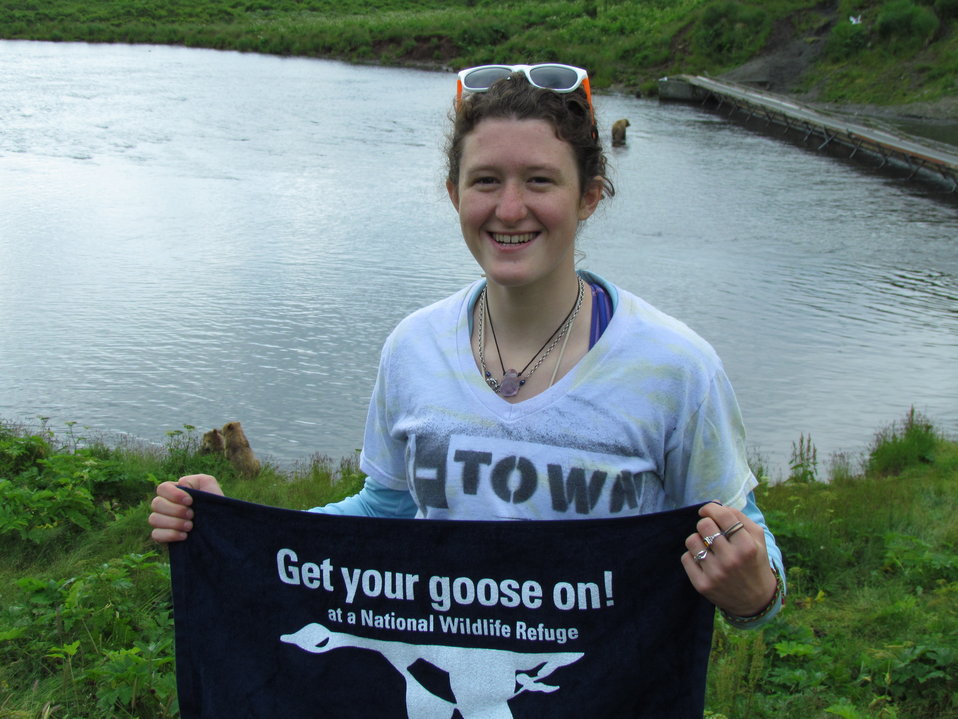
Get Your Goose On! - Alaska Style

YCC crew member, Iris Blakeslee, with three Kodiak Brown Bears

Credit: Shelly Lawson / USFWS

The Kodiak National Wildlife Refuge is a United States National Wildlife Refuge in the Kodiak Archipelago in southwestern Alaska, United States.

The Kodiak National Wildlife Refuge includes the southwestern two-thirds of Kodiak Island, Uganik Island, the Red Peaks area of Afognak Island and all of Ban Island in the archipelago. It encompasses 1,990,418 acres (8,054.94 km2).[2] The refuge is administered from offices in Kodiak.

The refuge contains seven major rivers and about 100 streams. It is a spawning ground for all six species of Pacific Ocean salmon, trout and several other fish species, as well as a nesting ground for 250 species of bird, many of which feed on salmon. The refuge has only six native species of mammals: Kodiak brown bear, red fox, river otter, ermine, little brown bat and tundra vole. The non-native mammals Sitka deer, mountain goat, Roosevelt elk, snowshoe hare and beaver were introduced to the archipelago between the 1920s and 1950s and are now hunted and trapped.

The climate of the refuge is that of southern Alaska, mild and rainy. Many areas in the refuge are densely forested with Sitka Spruce at lower elevations. There are grasslands in drier areas and at higher elevations. The refuge contains several small glaciers.